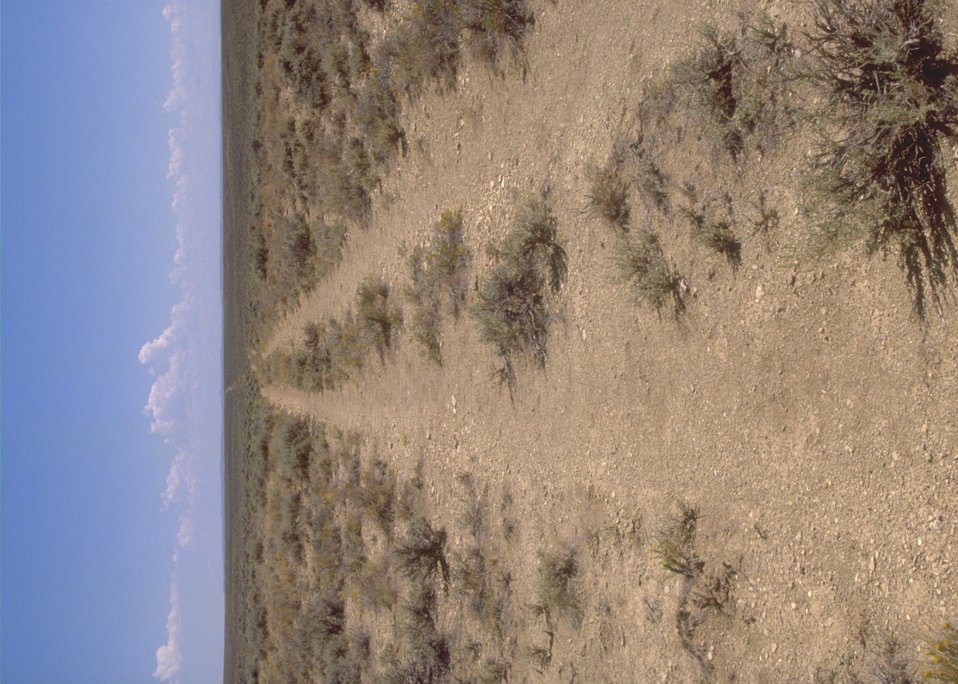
Indian Emigrant relations interpretive area along the Oregon Trail showing where the trail was located, Rock Springs Field Office.